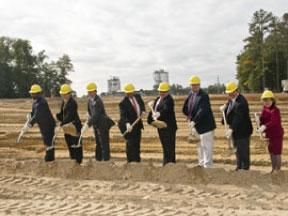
Salt waste disposal unit construction

Construction is under way on a new-style disposal unit for salt waste materials at the U.S. Department of Energy’s (DOE) Savannah River Site (SRS) in South Carolina. Ground-breaking ceremonies for the unit were held this week with DOE and Washington Savannah River Company (WSRC) Team officials.